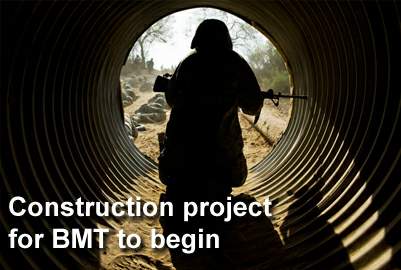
Basic Military Training construction project begins this fall

Thirteen new Basic Military Training facilities with a price tag of nearly $900 million will start to be constructed in October at Lackland Air Force Base, Texas. The eight Airmen training complexes and four associated dining-classroom facilities will be located on two campuses. The campuses replace existing 1,000-man recruit housing and training buildings currently scattered around the base.